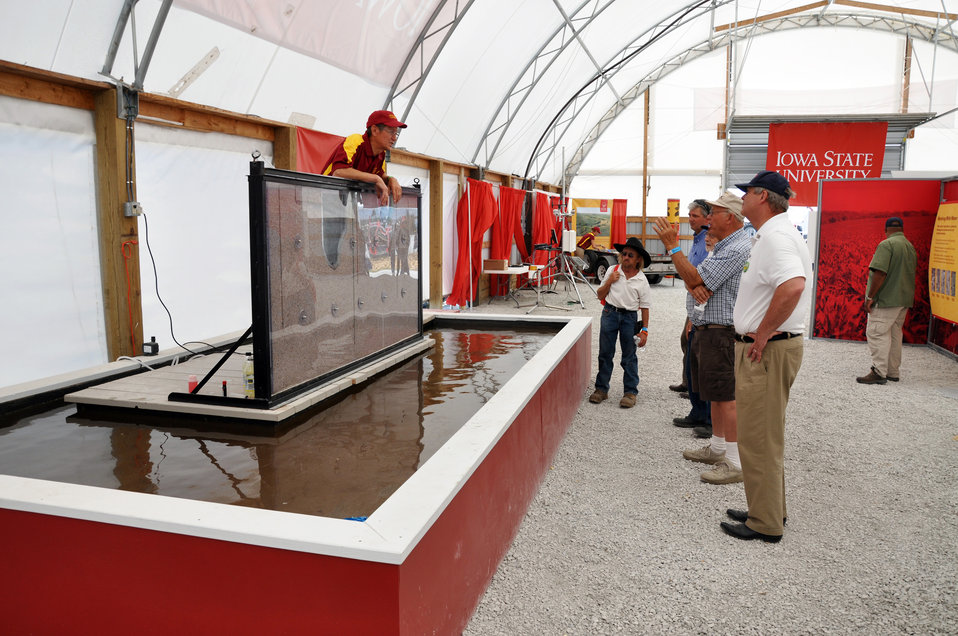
Agriculture Secretary Tom Vilsack views an Iowa State University display that shows how nitrogen and phosphorus leave tile lines during the 2012 Farm Progress Show in Boone, Iowa, on Aug. 30, 2012. Iowa Water Center Director Rick Cruse explains how the display works.